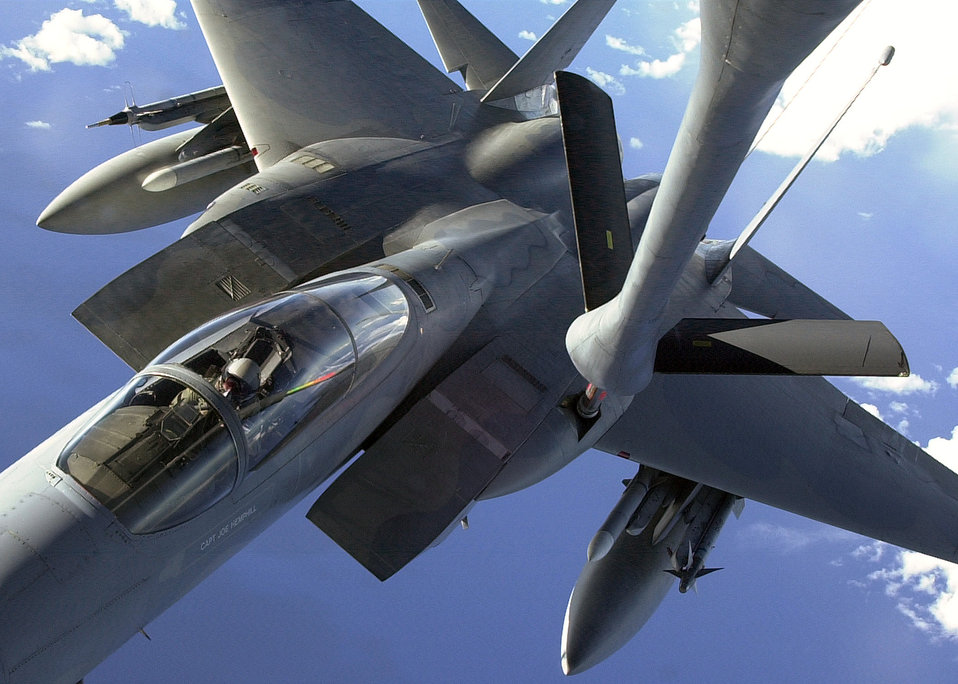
Ocean refueling

OVER THE PACIFIC OCEAN -- An F-15C from the 67th Fighter Squadron refuels in flight from a KC-135R, from the 909th Air Refueling Squadron, June 28, 2001, while on a routine training mission over the Pacific ocean. Both units are stationed at Kadena Air Base, Japan.